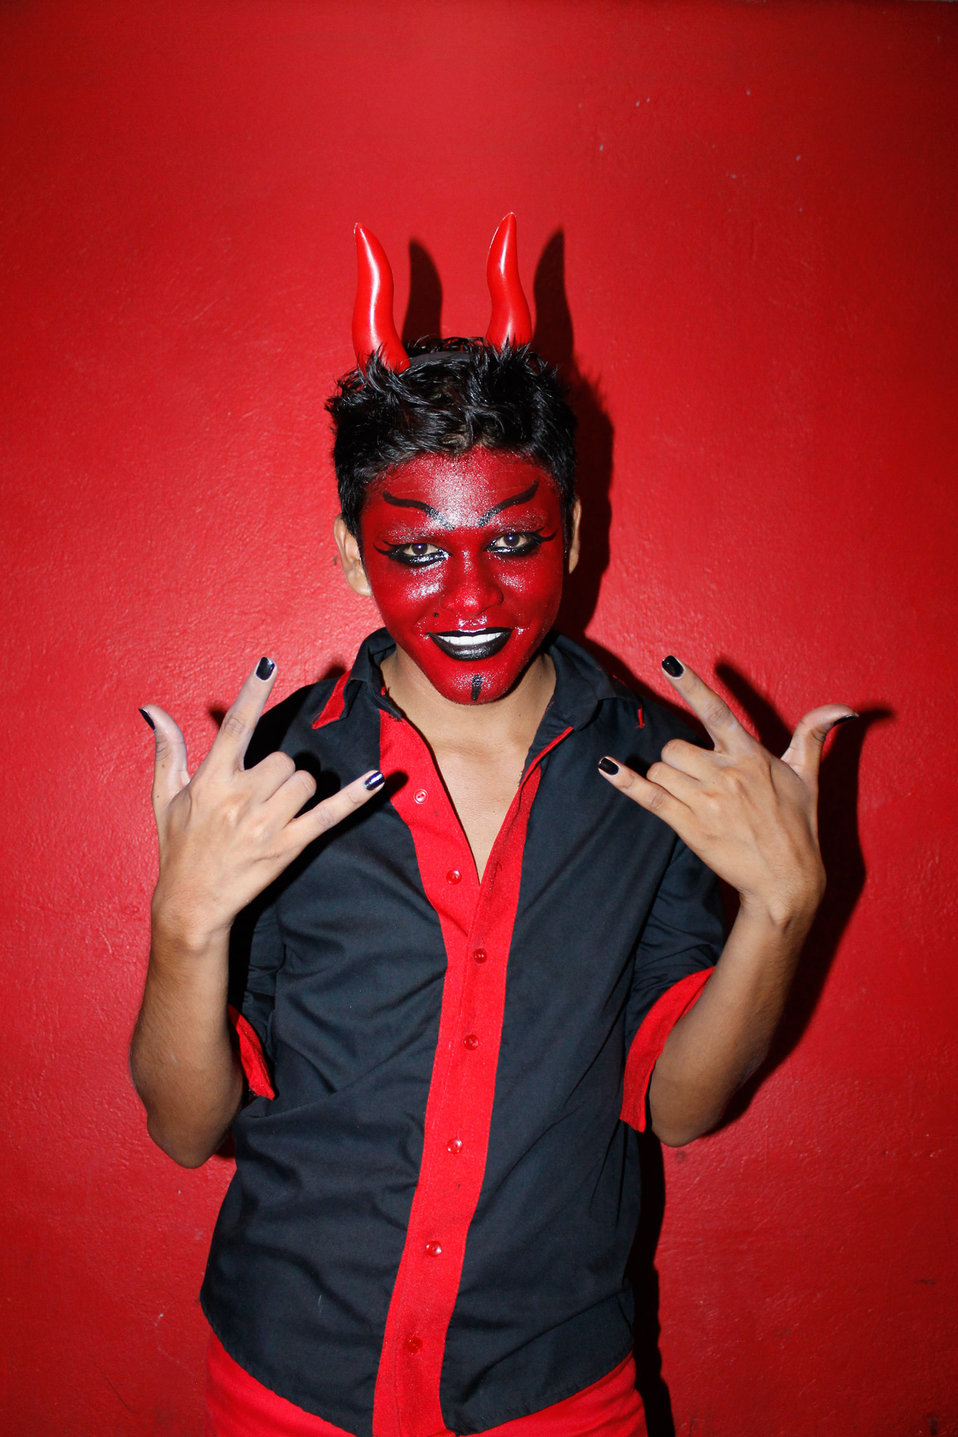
Devil costume.